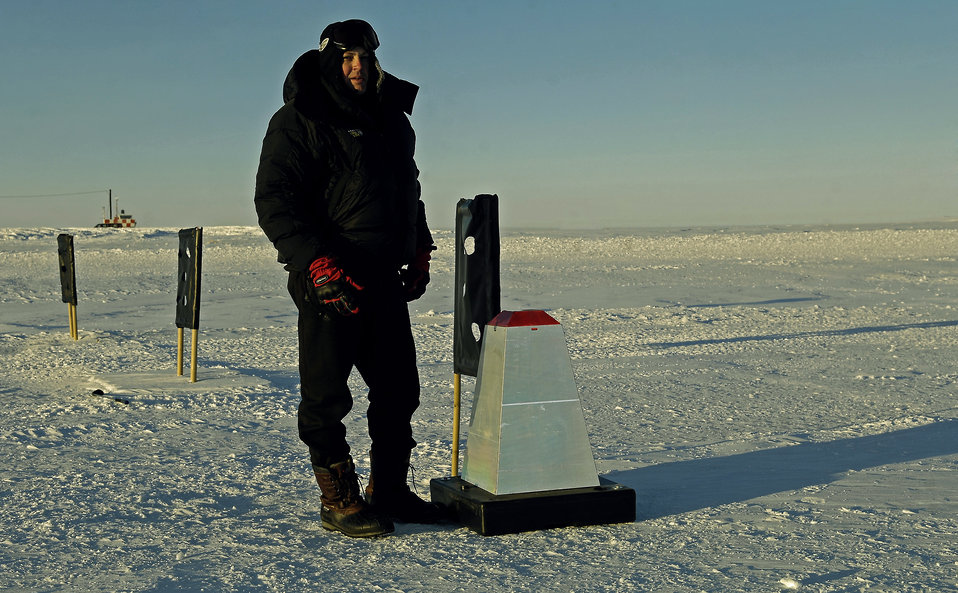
C-17 crew makes history in Antarctica

Maj. Corey A. Simmons stands next to a reflective cone on the Pegasus Ice Runway near McMurdo Station, Antarctica, on Sept. 10. Major Simmons was part of an aircrew that tested the concept of using night vision technology in combination with the reflective cones and limited electrical lighting to land safely on the ice runway after dark. The aircrew is part of Joint Task Force Support Forces Antarctica, headquartered at Hickam Air Force Base, Hawaii, and led by 13th Air Force. The joint task force is currently conducting Operation Deep Freeze in support of the National Science Foundation and U.S. Antarctic Program. Major Simmons is a C-17 evaluator pilot with the 62nd Operations Support Squadron at McChord AFB, Wash.